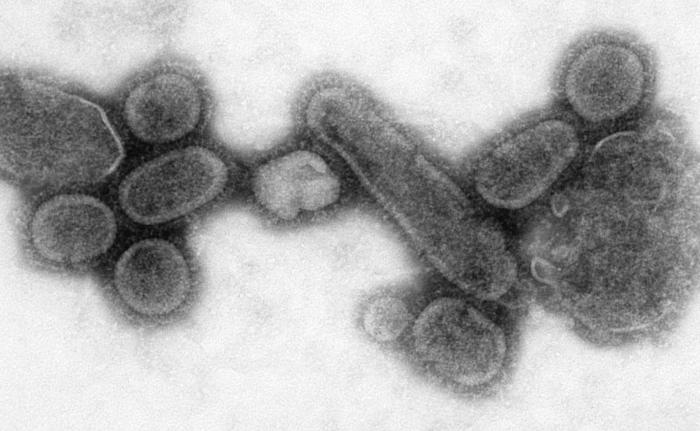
This negative stained transmission electron micrograph (TEM) showed recreated 1918 influenza virions that were collected from the supernatant of a 1918-infected Madin-Darby Canine Kidney (MDCK) cell culture 18 hours after infection. In order to sequester these virions, the MDCK cells were spun down (centrifugation), and the 1918 virus present in the fluid was immediately fixed for negative staining.